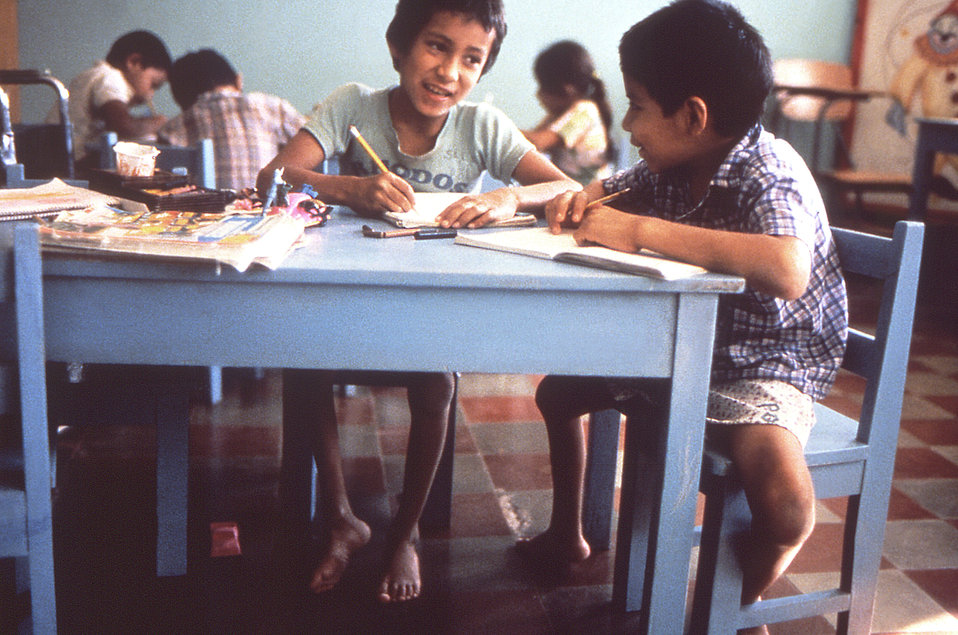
Here we see two young Latin-American school boys seated in a classroom with other children, however, looking carefully, you'll notice the atrophic appearance of their legs, which was caused by the disease poliomyelitis.